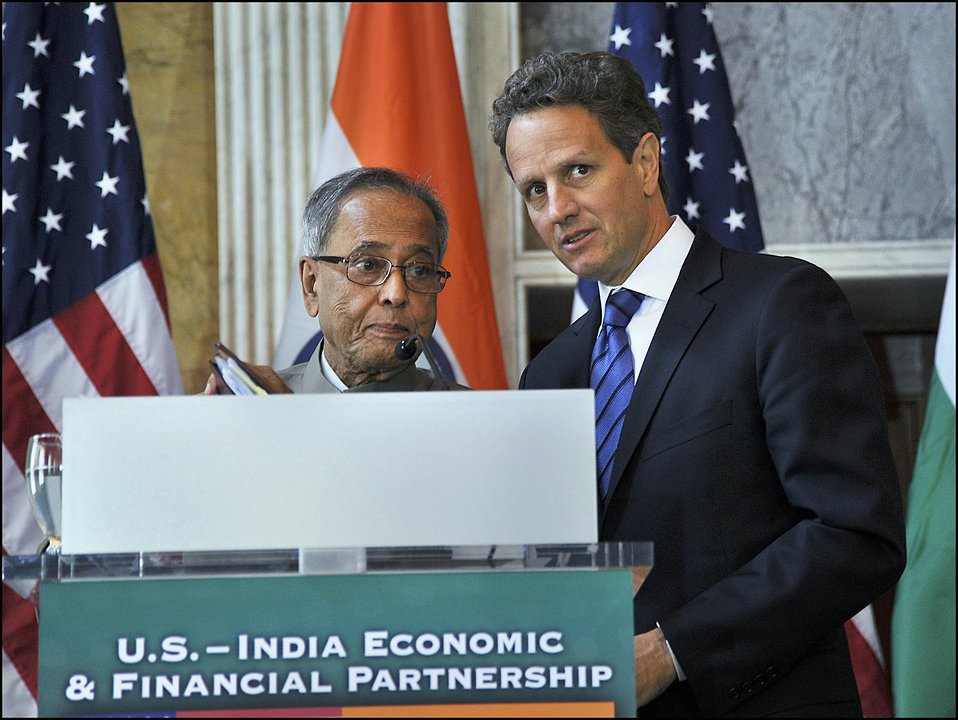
2011 U.S.-India Partnership

Indian Finance Minister Pranab Mukherjee and Treasury Secretary Tim Geithner after the press conference that concluded the 2011 U.S.-India Economic and Financial Partnership.